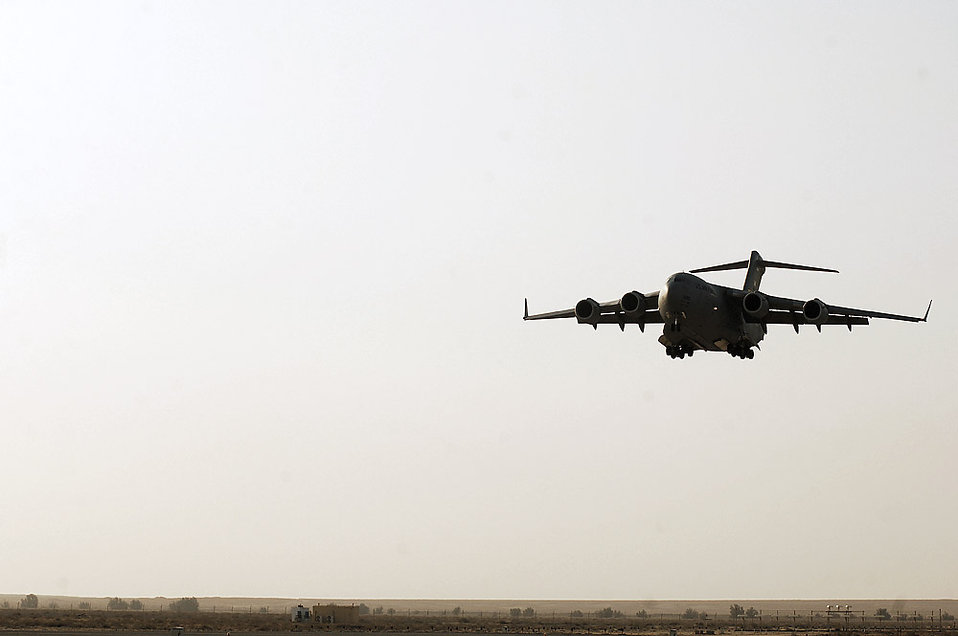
May 20 airpower summary: C-17s carry mission to front

A C-17 Globemaster III is returning to an air base in Southwest Asia after conducting a mission engaged in the War on Terrorism. C-17s transport passengers and cargo throughout the area of operations.